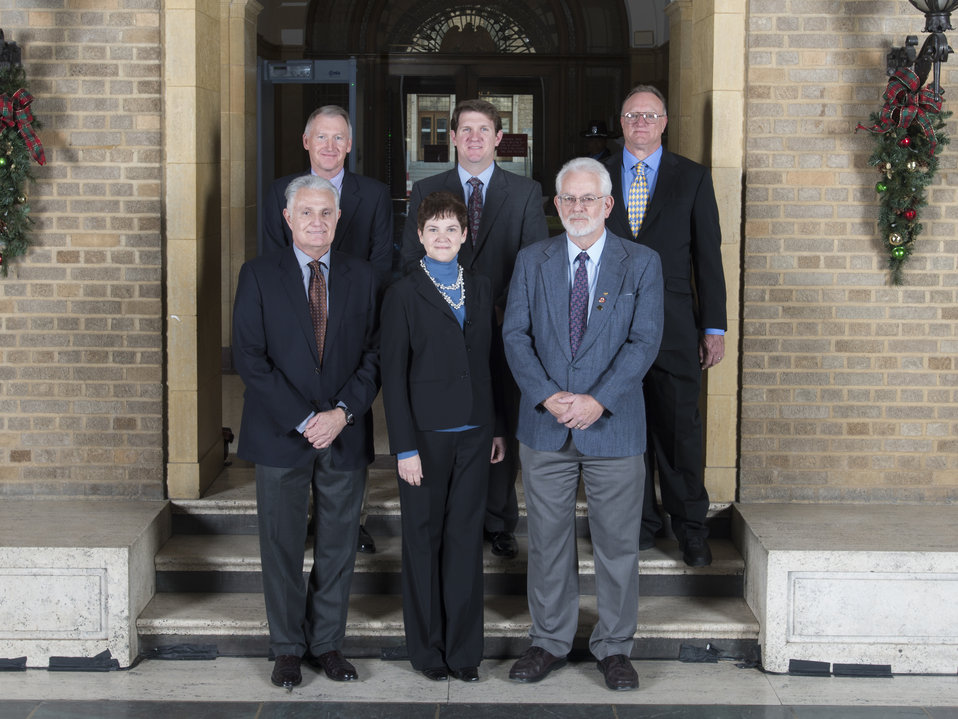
Agriculture Deputy Secretary Krysta Harden stands with the Ogallala Aquifer Program, Agricultural Research Service from Bushland, TX on the patio at the U.S. Department of Agriculture (USDA) in Washington, D.C. on Wednesday, Dec. 11, 2013. The team received the Secretary’s Honor Award for sustaining rural prosperity across the drought-prone Southern High Plains by finding solutions to problems from declining water availability from the Ogallala Aquifer.